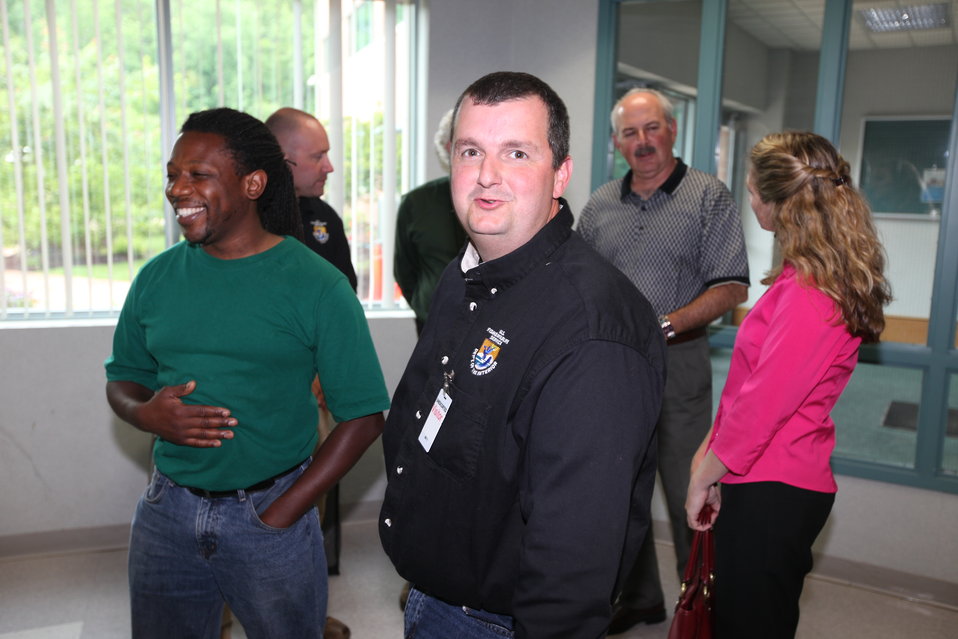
Northeast Region Employee Appreciation Awards